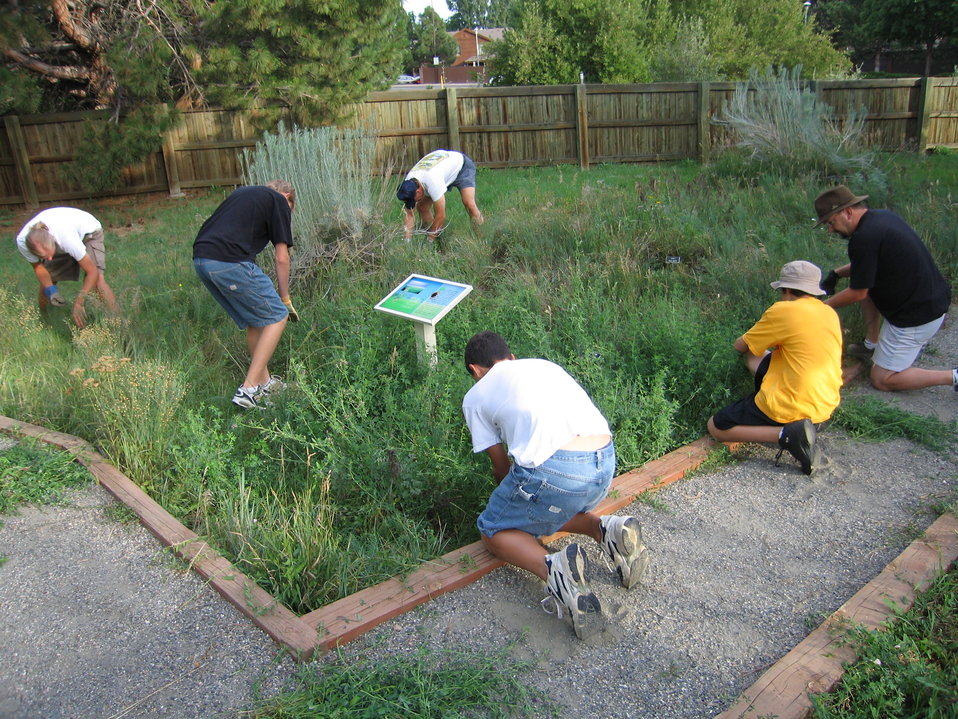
Eagle Scout - Prairie Garden 2